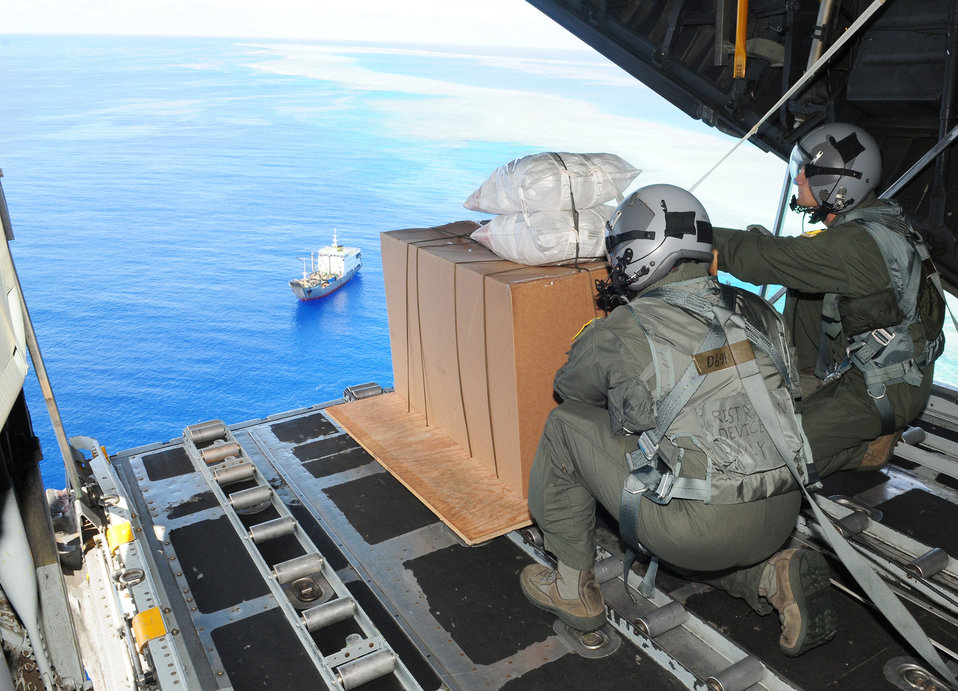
Santa 23 Drop

Airmen gauge the distance before pushing humanitarian goods out of